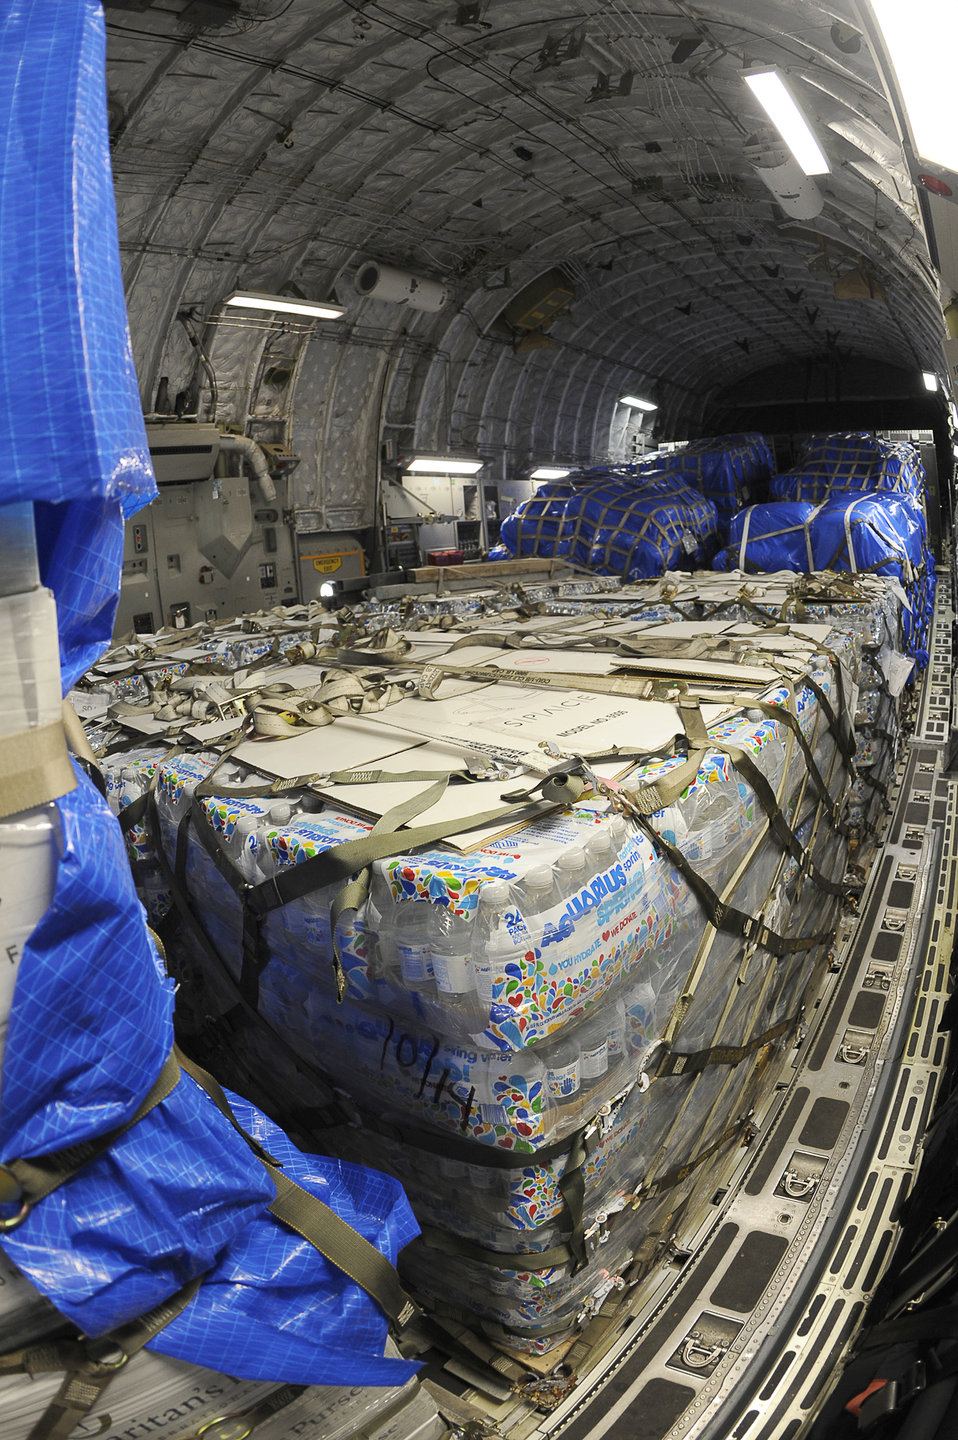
First C-17 touches down in Sendai

Humanitarian supplies are transported on a C-17 Globemaster III aircraft from Yokota Air Base to Sendai Airport, Japan, March 20, 2011. Airmen from the 517th Airlift Squadron at Joint Base Elemendorf-Richardson, Alaska, flew the first C-17 into Sendai Airport in support of Operation Tomodachi.